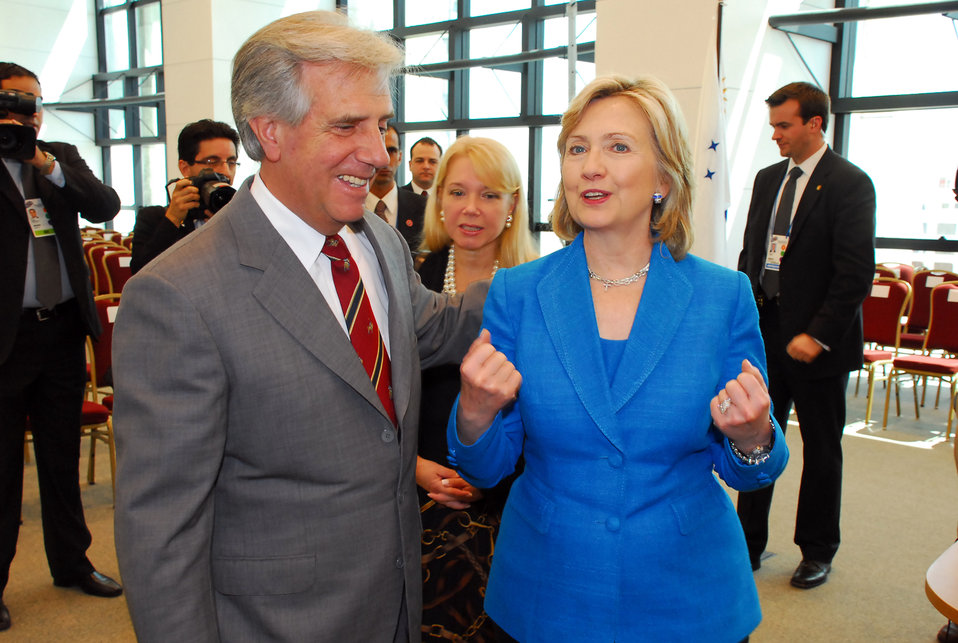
Secretary Clinton Meets With Uruguay President

U.S. Secretary of State Hillary Clinton and Uruguay President Tabaré Vázquez after their private meeting in Montevideo, Uruguay March 1, 2010.